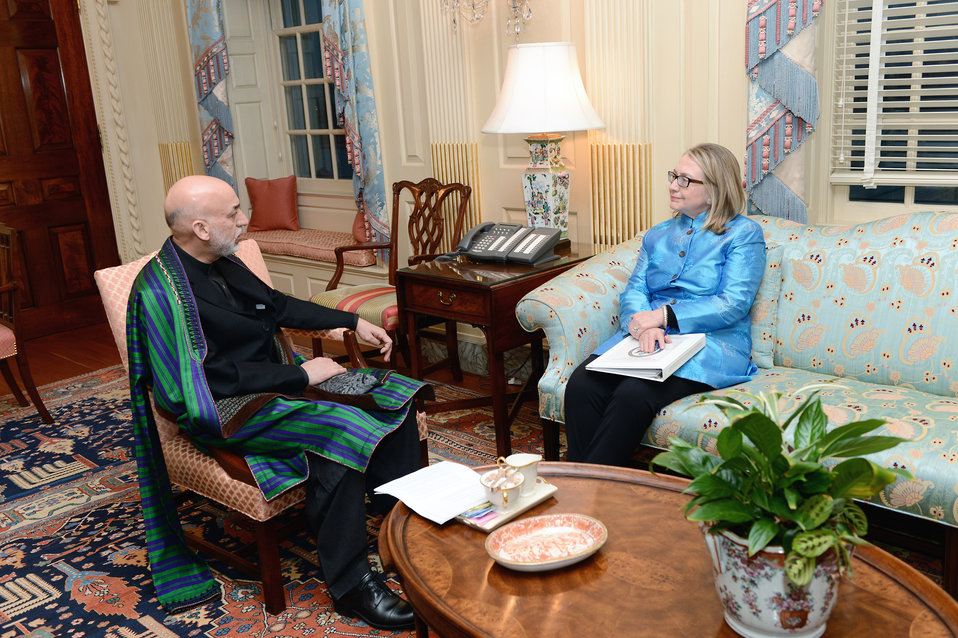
Secretary Clinton Meets With President Karzai

U.S. Secretary of State Hillary Rodham Clinton meets with Afghan President Hamid Karzai at the U.S. Department of State in Washington, D.C., January 10, 2013.